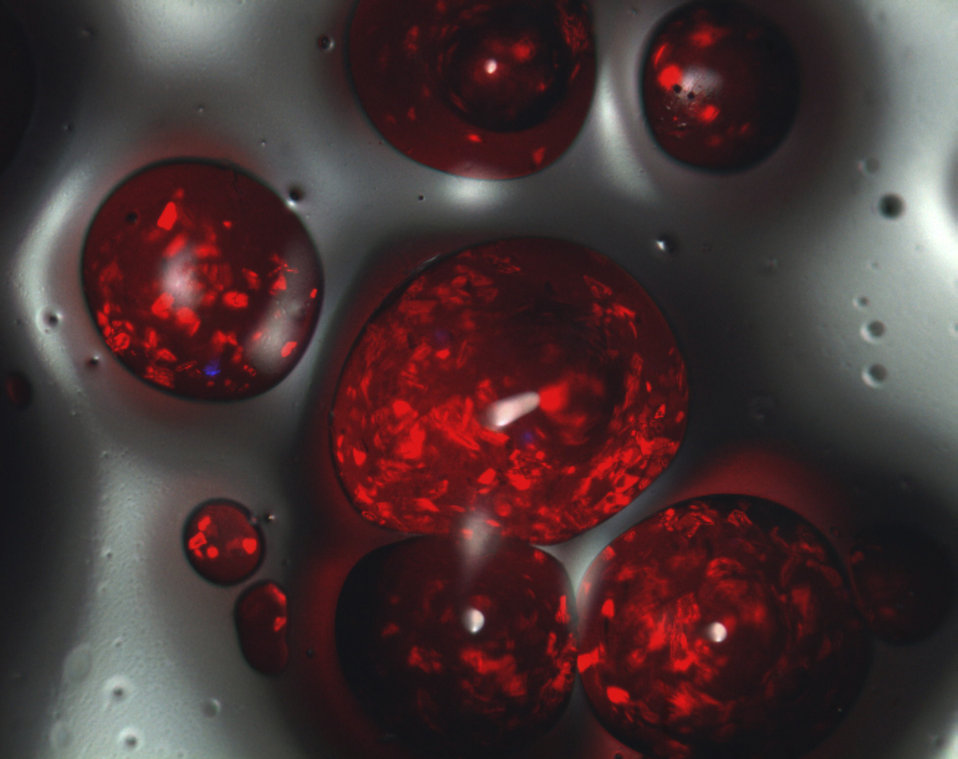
Suspensions of polymer liquid crystal flakes
(magnified 100X) in silicon oil can be microencapsulated within the body of a flexible polymer film to form electrically switchable conformal coatings.

This new class of electro-optical materials is especially well suited for applications such as reflective flexible displays and switchable/tunable optical coatings.